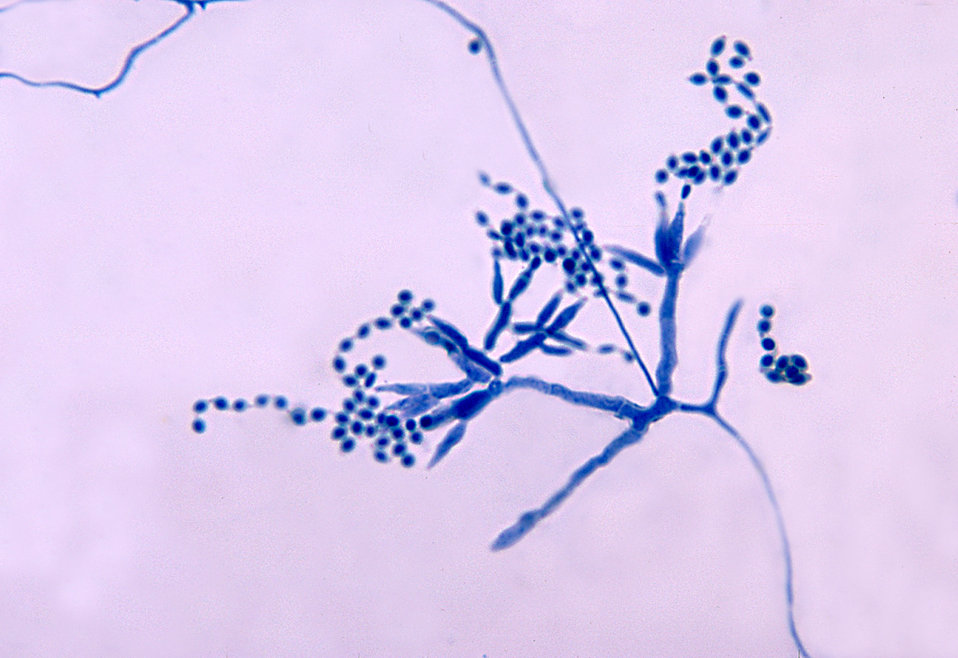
This micrograph depicts multiple conidia-laden conidiophores and phialides of a Penicillium marneffei fungal organism.